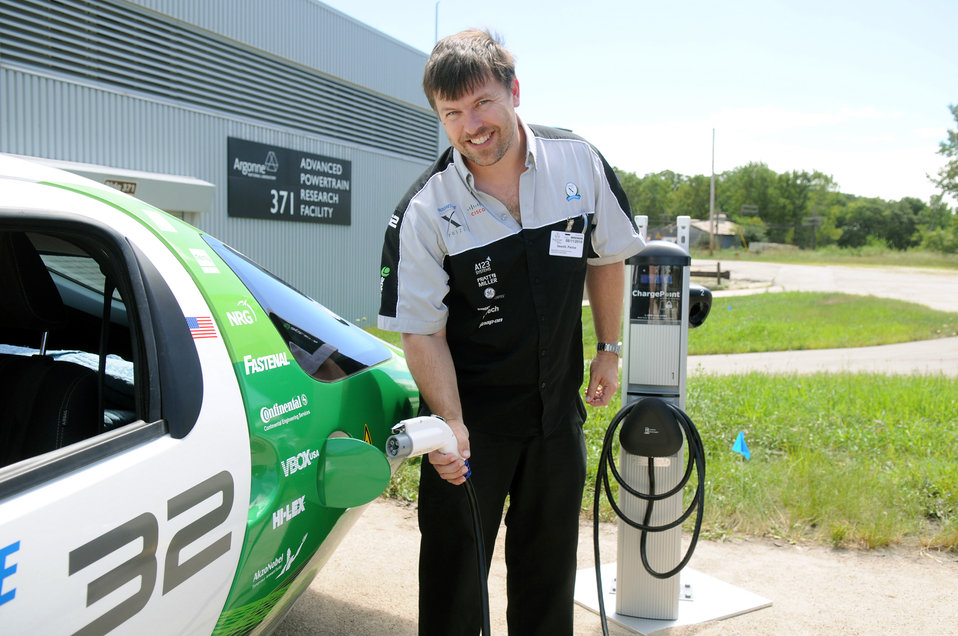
Paulus Gentile of Aptera Motors charges the Aptera 2E before testing at Argonne's Advanced Powertrain Research Facility (APRF).

Argonne was the last stop for competitors in Progressive Insurance's Automotive X Prize Competition. In August 2010, APRF researchers provided validation testing for the finalists' vehicles to see if they met the competition's goals for performance and efficiency targets.